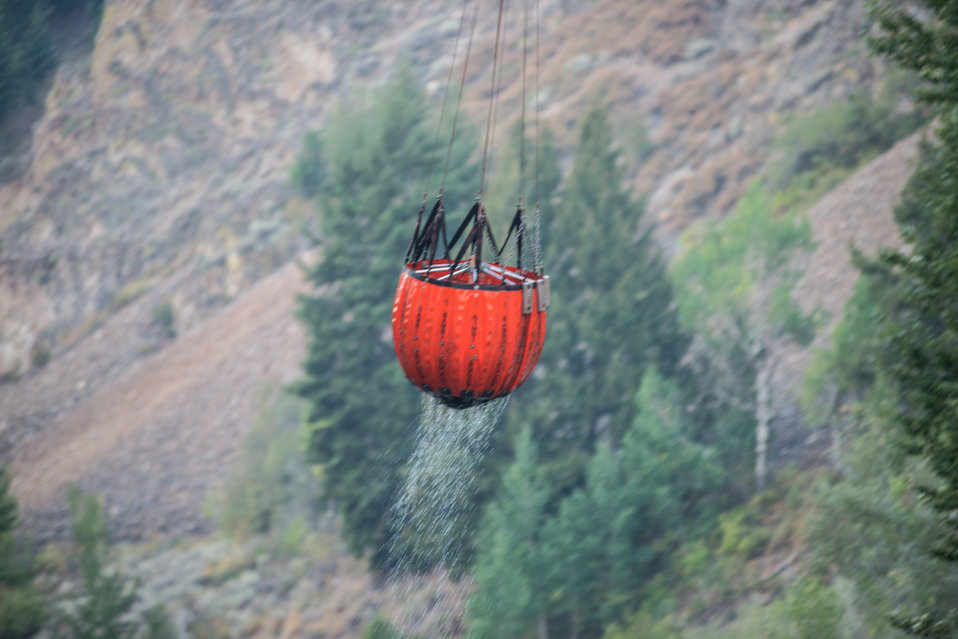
A Bell UH-1H helicopter lifts a full Bambi Bucket, a collapsible bucket utilizing a pilot-controlled release valve, that is able to deliver a concentrated column of water from the helicopter to the fire on the Carbonate Ridge, rising behind the Wood River, during Beaver Creek Fire, west of Hailey, ID, on Monday, Aug 19, 2013.